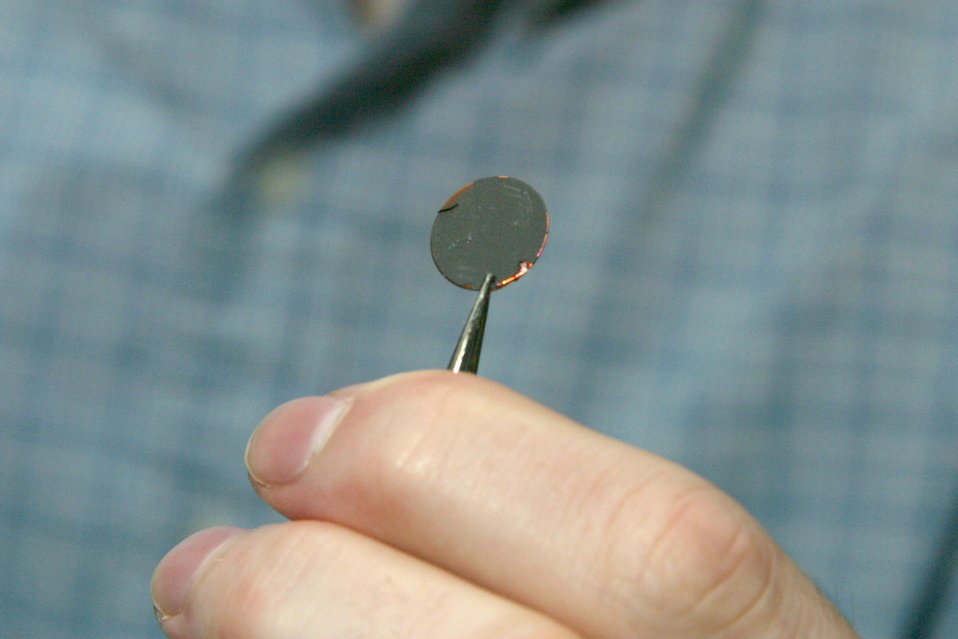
SNL RESEARCHER HOLDS AN ELECTRODE MADE BY COATING COPPER FOIL WITH SILICON/GRAPHITE MATERIAL.

THE ELECTRODE SHOWN COULD SERVE AS A MORE COMPACT, LONGER LASTING, POWER SOURCE FOR RECHARGEABLE LITHIUM-ION BATTERIES. RESEARCHERS AT DOE'S SANDIA NATIONAL LABORATORIES DEVELOPED A NEW CLASS OF COMPOSITE ANODE MATERIALS COMPOSED OF SILICON AND GRAPHITE THAT MAY DOUBLE THE ENERGY STORAGE CAPACITIES CURRENTLY POSSESSED BY GRAPHITE ANODES, POTENTIALLY LEADING TO RECHARGEABLE LITHIUM-ION BATTERIES WITH MORE POWER, LONGER LIFE, AND SMALLER SIZES.